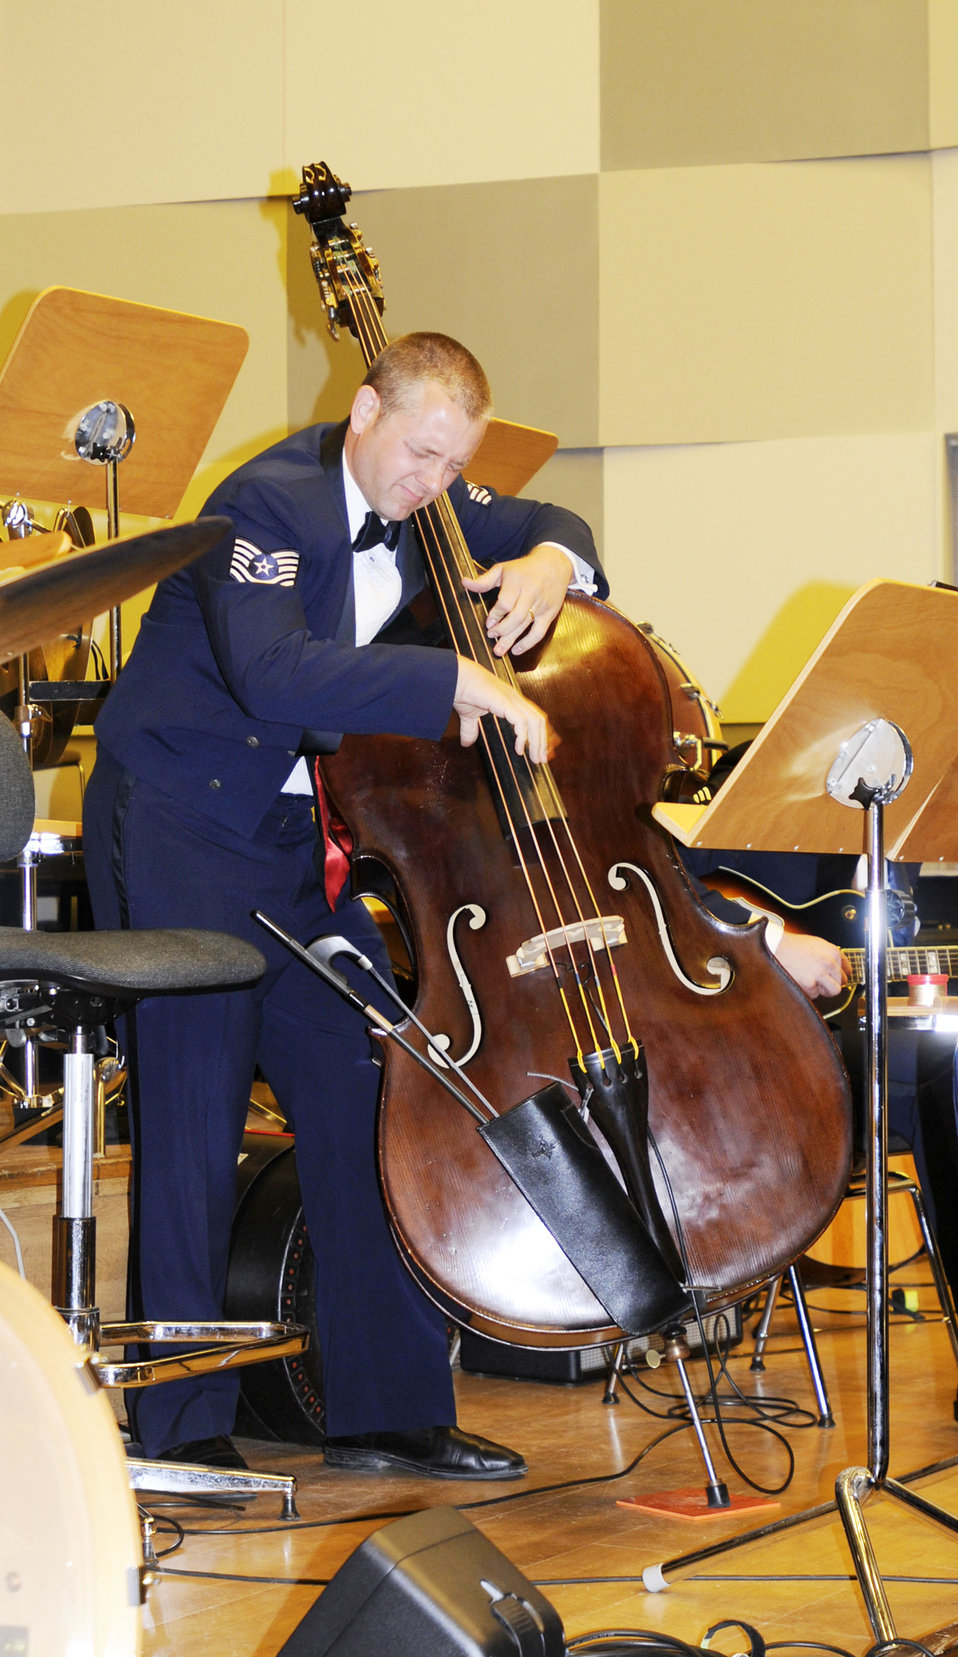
USAFE Band tours Poland

Tech. Sgt. Sam Kennedy plays the bass during a jazz number that was part of a U.S. Air Forces in Europe Band concert in Wroclaw, Poland, Oct. 20, 2009.